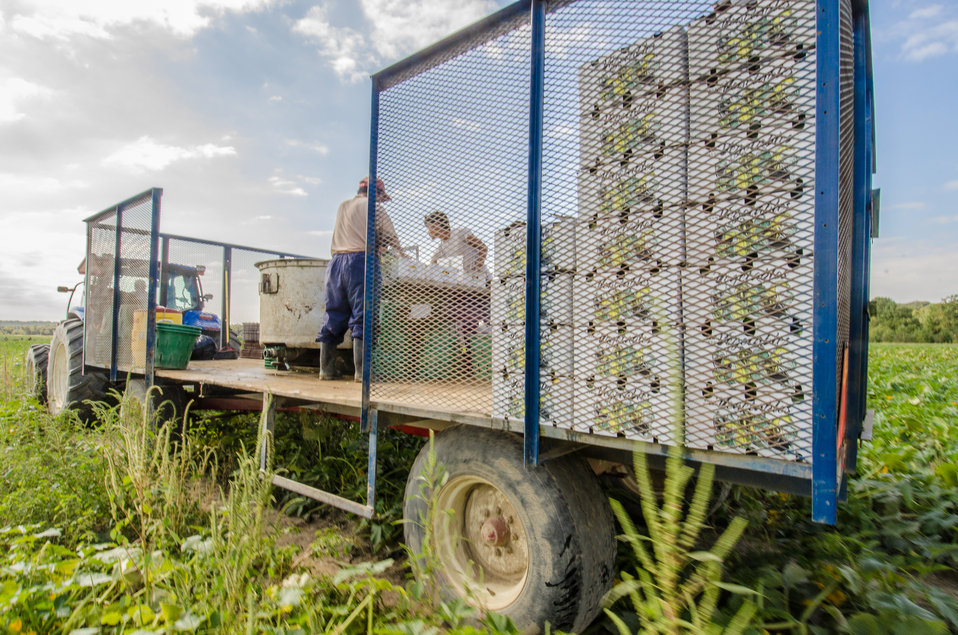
Migrant workers rinse and pack just-picked yellow squash into 1/2-bushel boxes at Kirby Farms in Mechanicsville, VA on Sep. 20, 2013. Kirby Farms is a third-generation family farm that covers 500 acres, and generates produce and grains on a year-around operation.